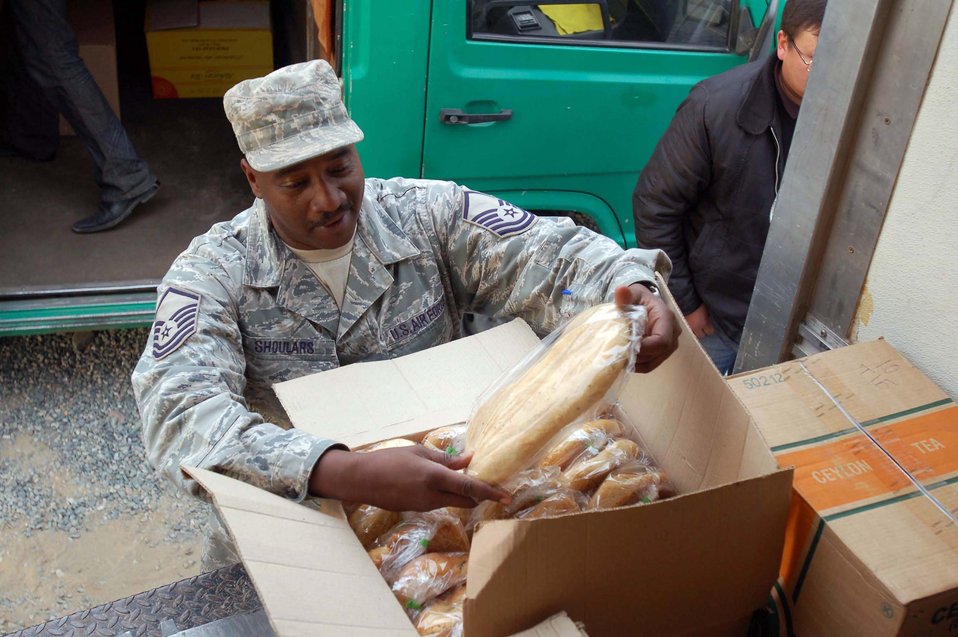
Airmen take steps to boost Kyrgyz economy

Master Sgt. John Shoulars opens a box of fresh bread during the first delivery of local farm products Oct. 27, 2009, at the Transit Center at Manas, Kyrgyzstan. The delivery was part of the steps Airmen here are making to support more local businesses. Sergeant Shoulars is the sustainment flight chief for the 376th Expeditionary Force Support Squadron.